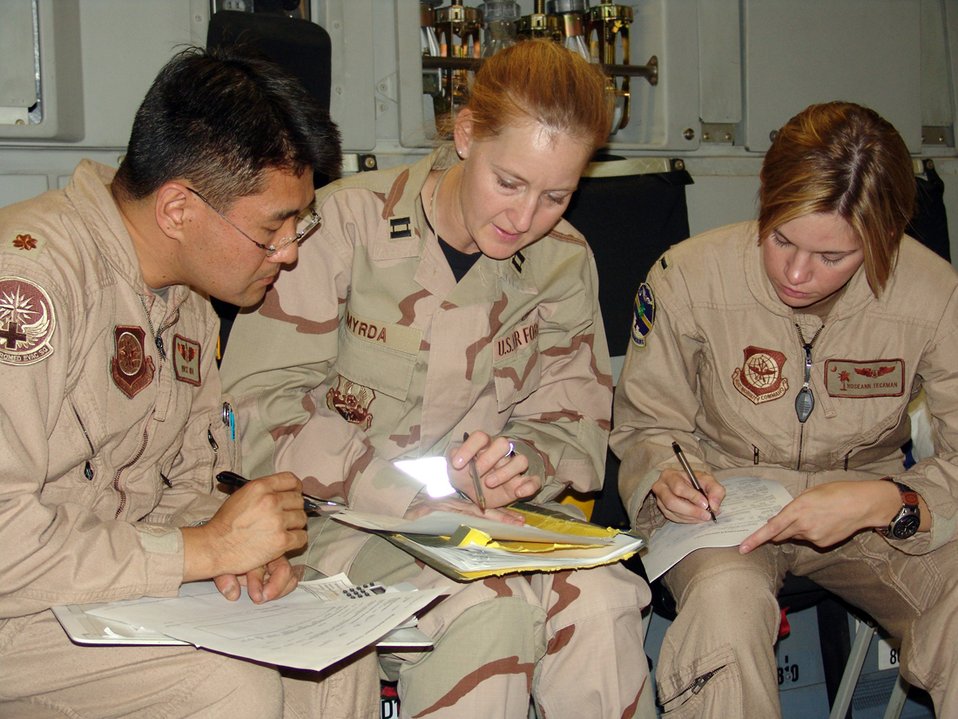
Aeromedical mission has healing touch

SOUTHWEST ASIA -- (From left) Maj. Vince Oda, Capt. Stephanie Myrda, and 1st Lt. Roseann Teckman review and annotate medical records inside a C-17 Globemaster III cargo compartment at a forward-deployed location. They are assigned to the 386th Contingency Aeromedical Staging Facility.